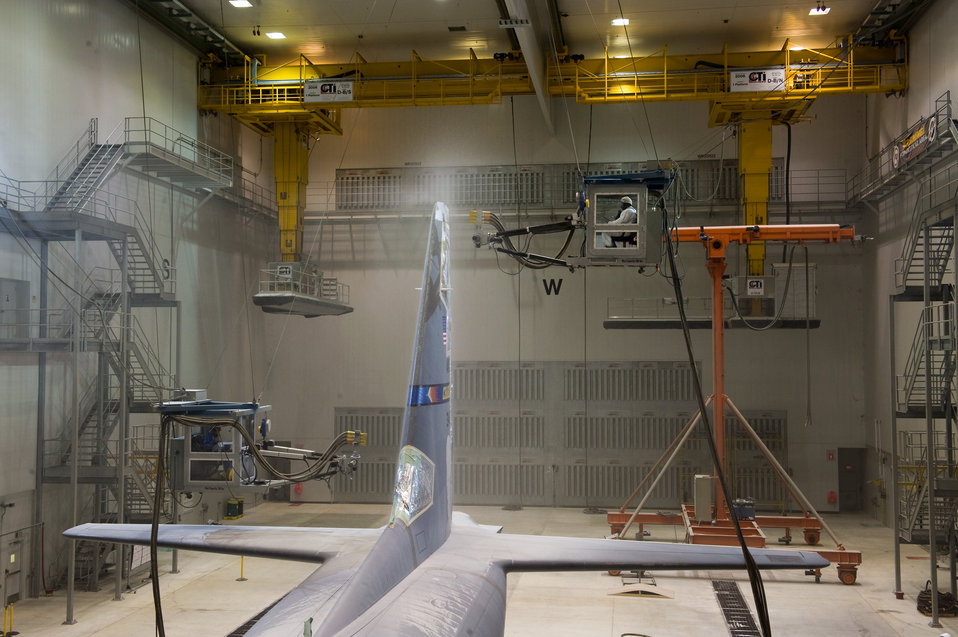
Depaint the big easy way

Marlo Foreman (right) controls one of the four Area Multi-axis Platforms, or AMP, to depaint a C-130 Hercules from the North Carolina Air National Guard at Robins Air Force Base, Ga., Oct. 8, 2009. Two of the four AMPs can be seen suspended from overhead rails. The operator controls the three-axis movement of the AMP and uses a set of four laser-aimed-nozzles that shoot compressed air and media at painted surfaces. The process breaks up the paint and reveals the bare surface underneath it.